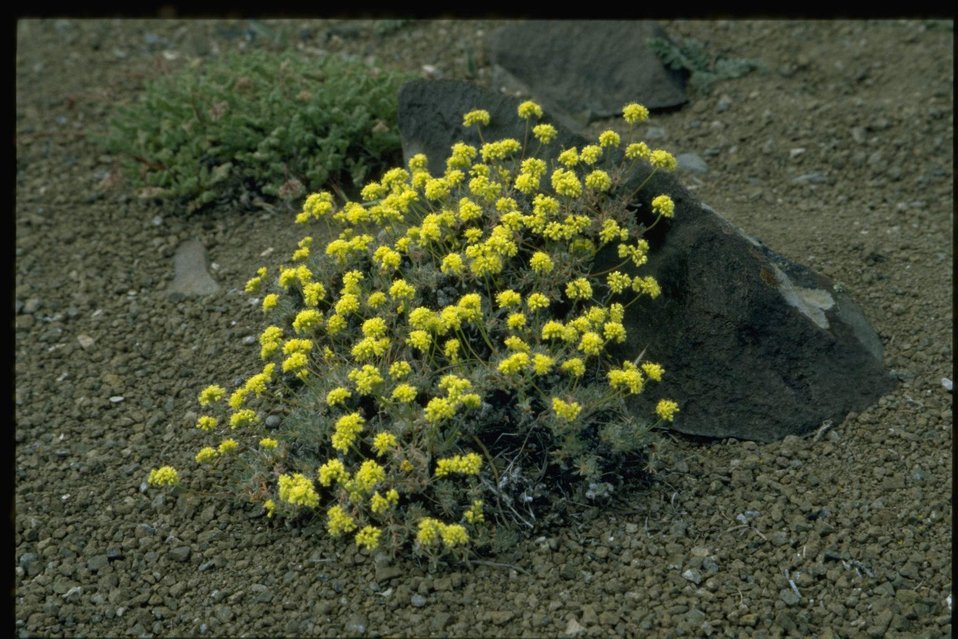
Far shot of buckwheat wildflowers.